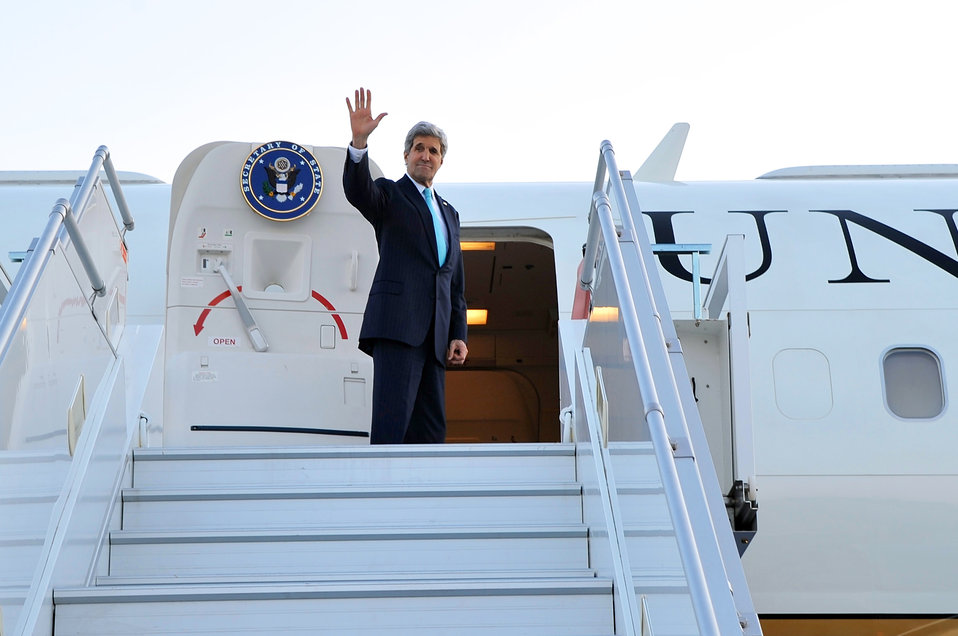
Secretary Kerry Bids Farewell to Geneva After Quadrilateral Meetings About Ukraine

U.S. Secretary of State John Kerry bids farewell to onlookers after finishing meetings in Geneva, Switzerland, on April 17, 2014, with Russian, Ukrainian, and European Union officials about Ukraine.